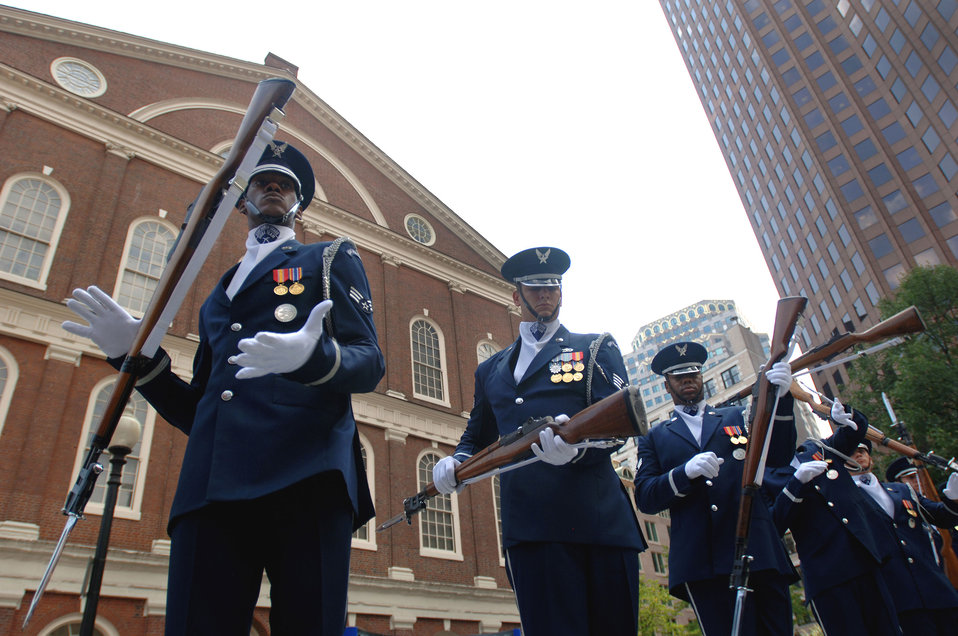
Boston proclamation party gets Air Force Week rolling

Senior Airman Jermain James (left) spins his rifle during a drill maneuver while performing with fellow members of the U.S. Air Force Honor Guard Drill Team at a proclamation ceremony for Air Force Week New England in front of historic Faneuil Hall in downtown Boston Aug. 17. The drill team is the traveling component of the Air Force Honor Guard and tours worldwide showcasing the precision of today's Air Force to recruit, retain and inspire Airmen.